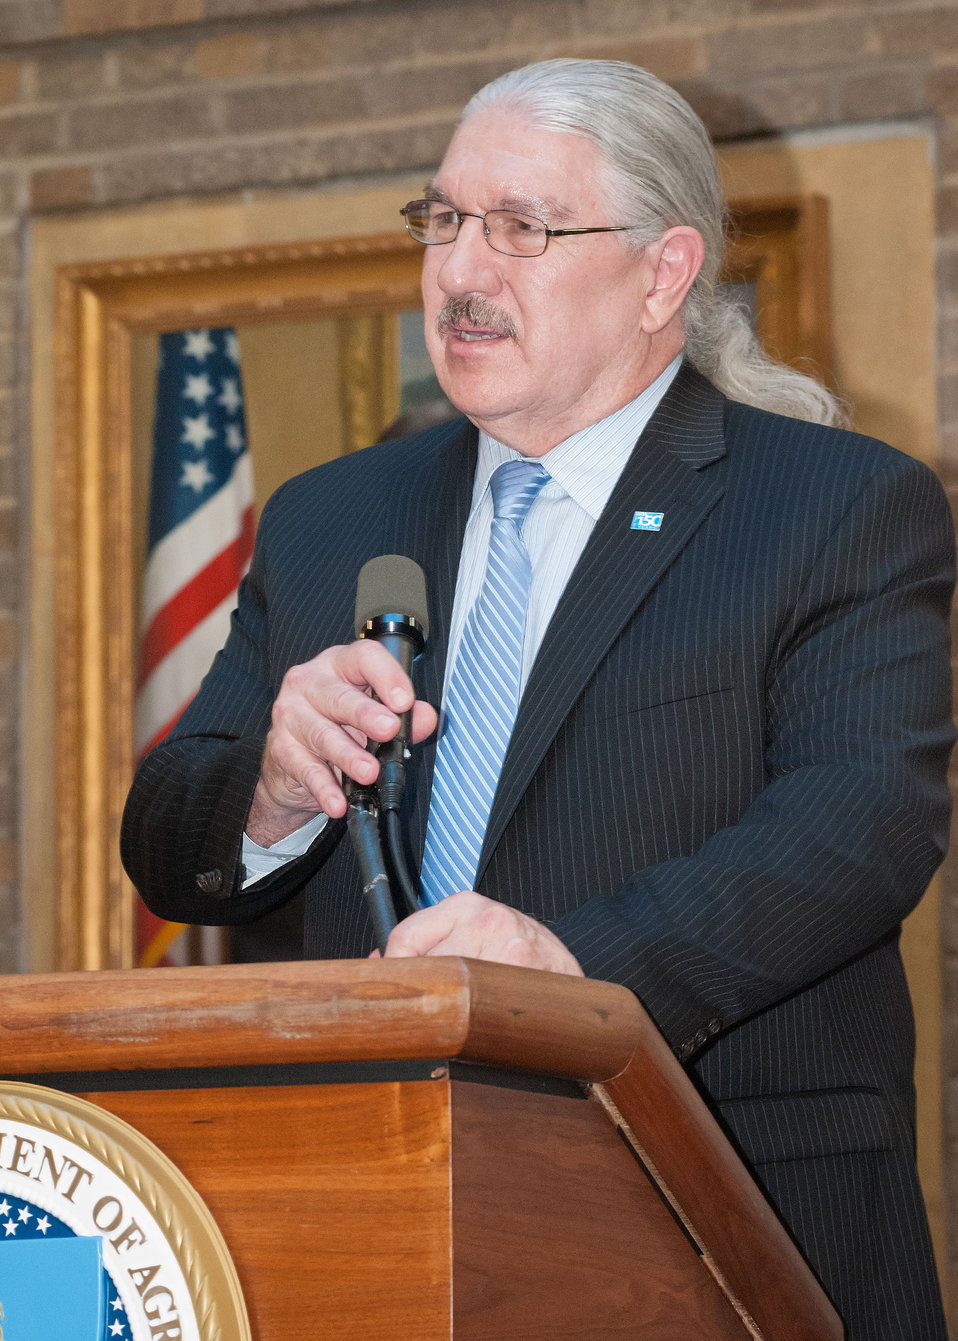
Butch Blazer, Deputy Under Secretary, Natural Resources and Environment spoke of the personal significance and emotion at the Chimney Rock National Monument Dedication Celebration held at the United States Department of Agriculture in Washington, D.C., on Monday, Sept. 24, 2012. President Barack Obama designated Chimney Rock in the San Juan National Forest in Southwest Colorado as a national monument on Friday, Sept. 21, 2012. A move that will help preserve 4,726 acres in southwestern Colorado surrounded by the Southern Ute Indian Reservation. The land will be managed by the U.S. Department of Agriculture Forest Service with assistance from local tribes. Chimney Rock was home to the Pueblo People 1,000 years ago and is culturally significant for Native American tribes.